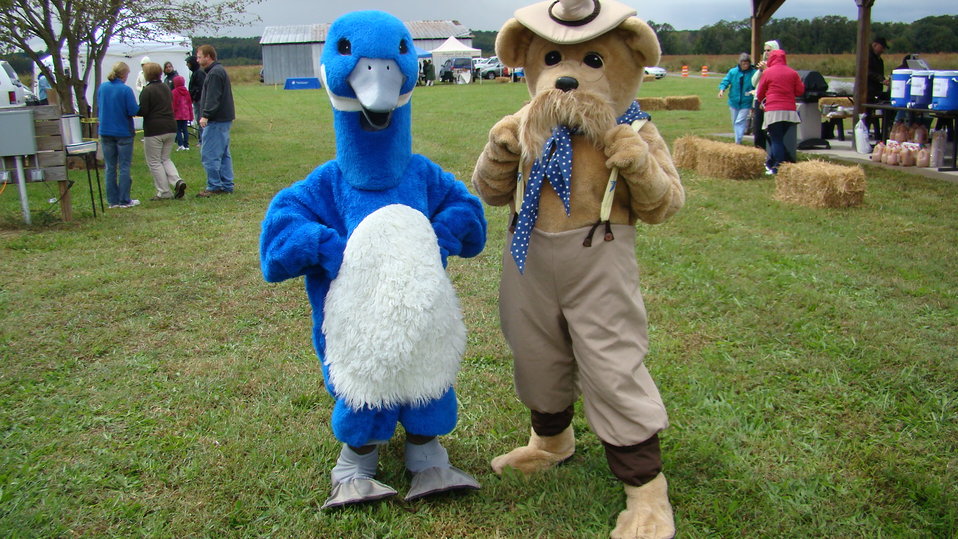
Rappahannock River Valley NWR 15th Anniversary

Puddles and T.R. Bear at the 'Go Wild!' celebration.